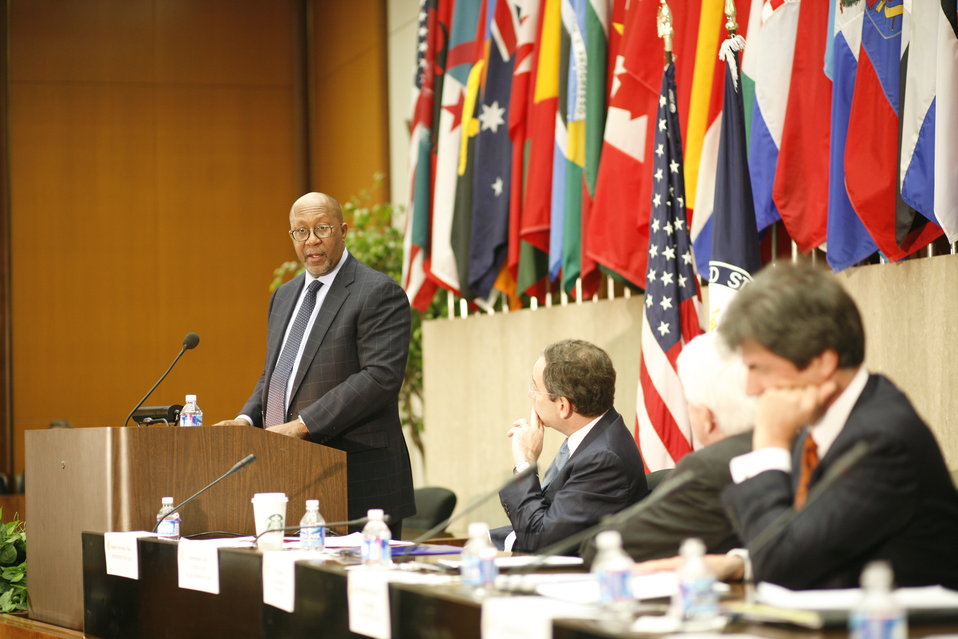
U.S. Trade Representative Kirk Delivers Remarks

U.S. Trade Representative Ron Kirk delivers remarks at the first-ever State Department Global Business Conference at the U.S. Department of State in Washington, D.C., on February 21, 2012. Also pictured in the photo, seated from right to left: Deputy Secretary of State Thomas Nides, President and CEO of the U.S. Chamber of Commerce Thomas Donohue, and Assistant Secretary of State for Economic and Business Affairs Jose Fernandez.